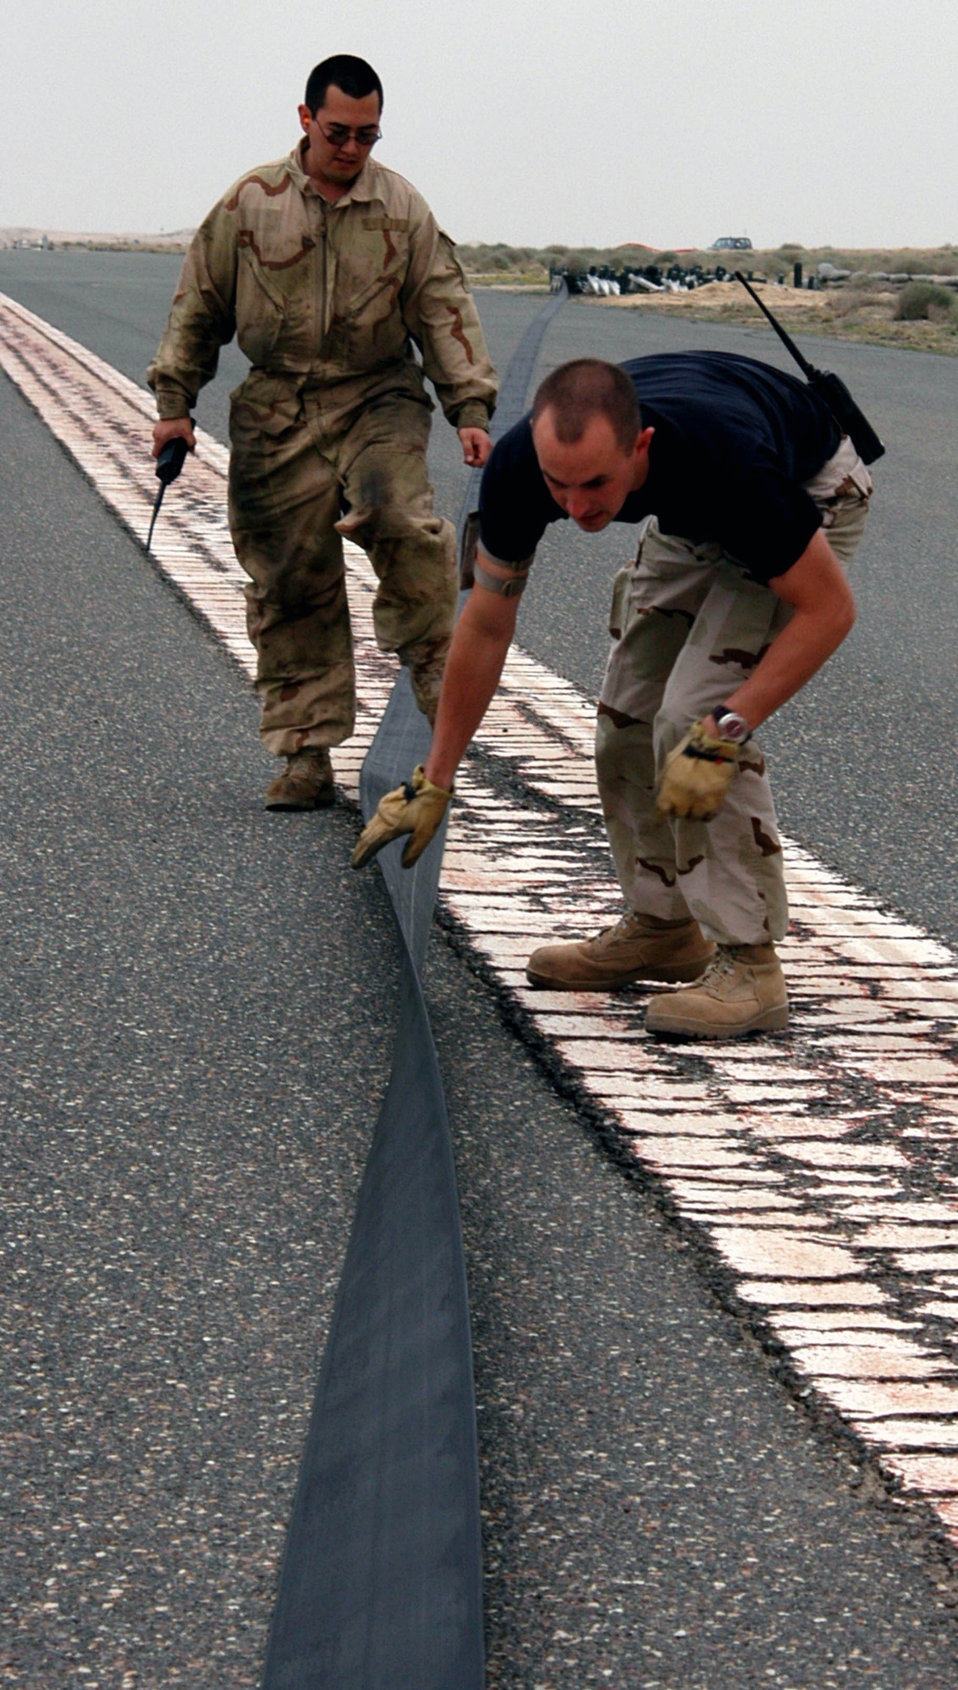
CE Airmen ready to snag an Eagle

SOUTHWEST ASIA -- Airmen of the 386th Expeditionary Civil Engineer Squadron inspect a mobile aircraft arresting system tape for fraying, tears or any other discrepancy before the system is certified and reeled back in.